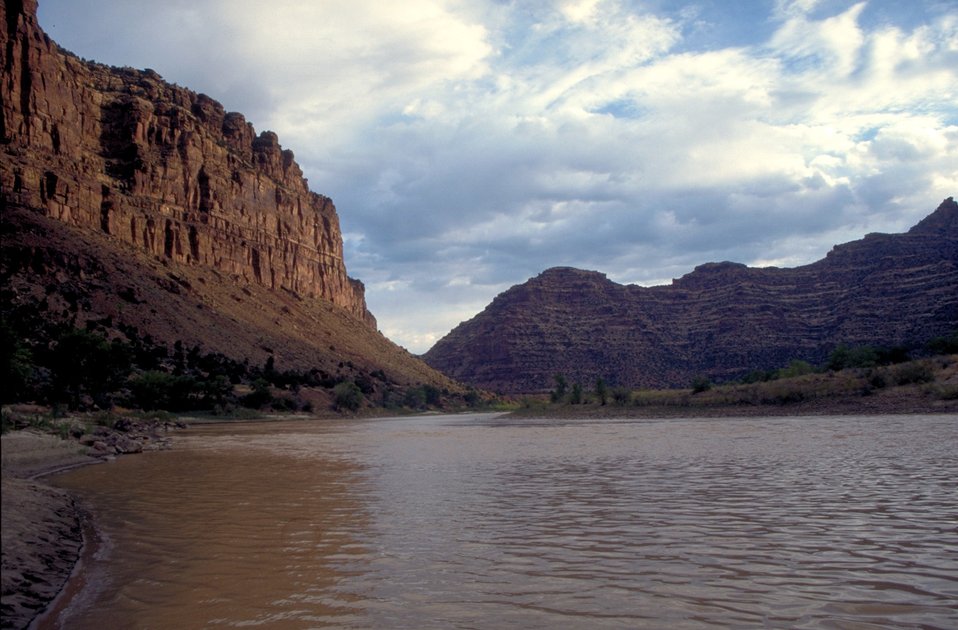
Desolation/Gray Canyons near Price, Utah.